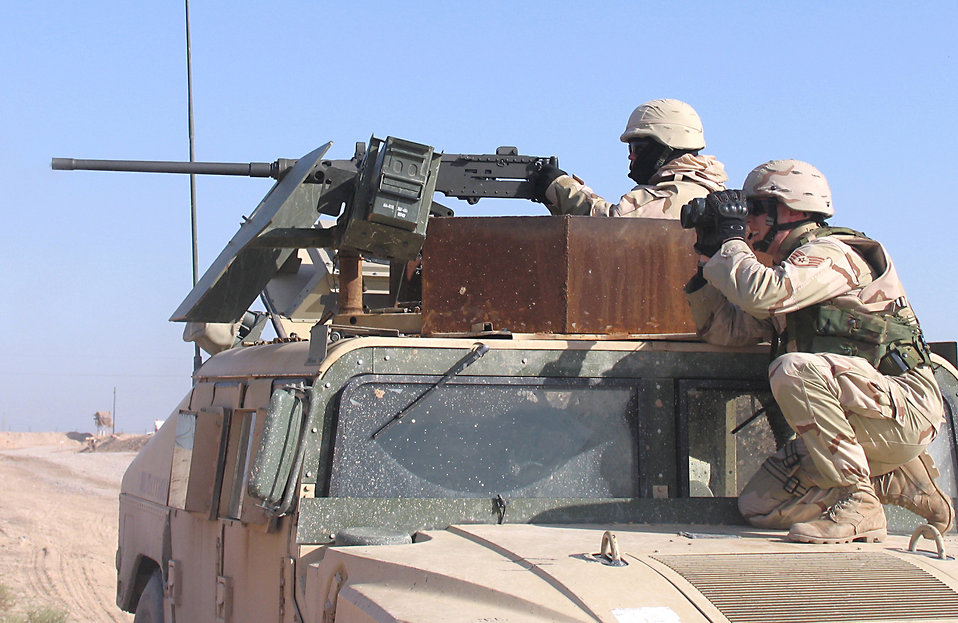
Live fire

CAMP BUCCA, Iraq -- Staff Sgt. Frank Woznick, right, checks the accuracy of .50-caliber machine gun fire by Senior Airman Jeffrey Polzin. The security forces troops were conducting a live-fire test here. They are responsible for base defense, force protection and convoy security here.